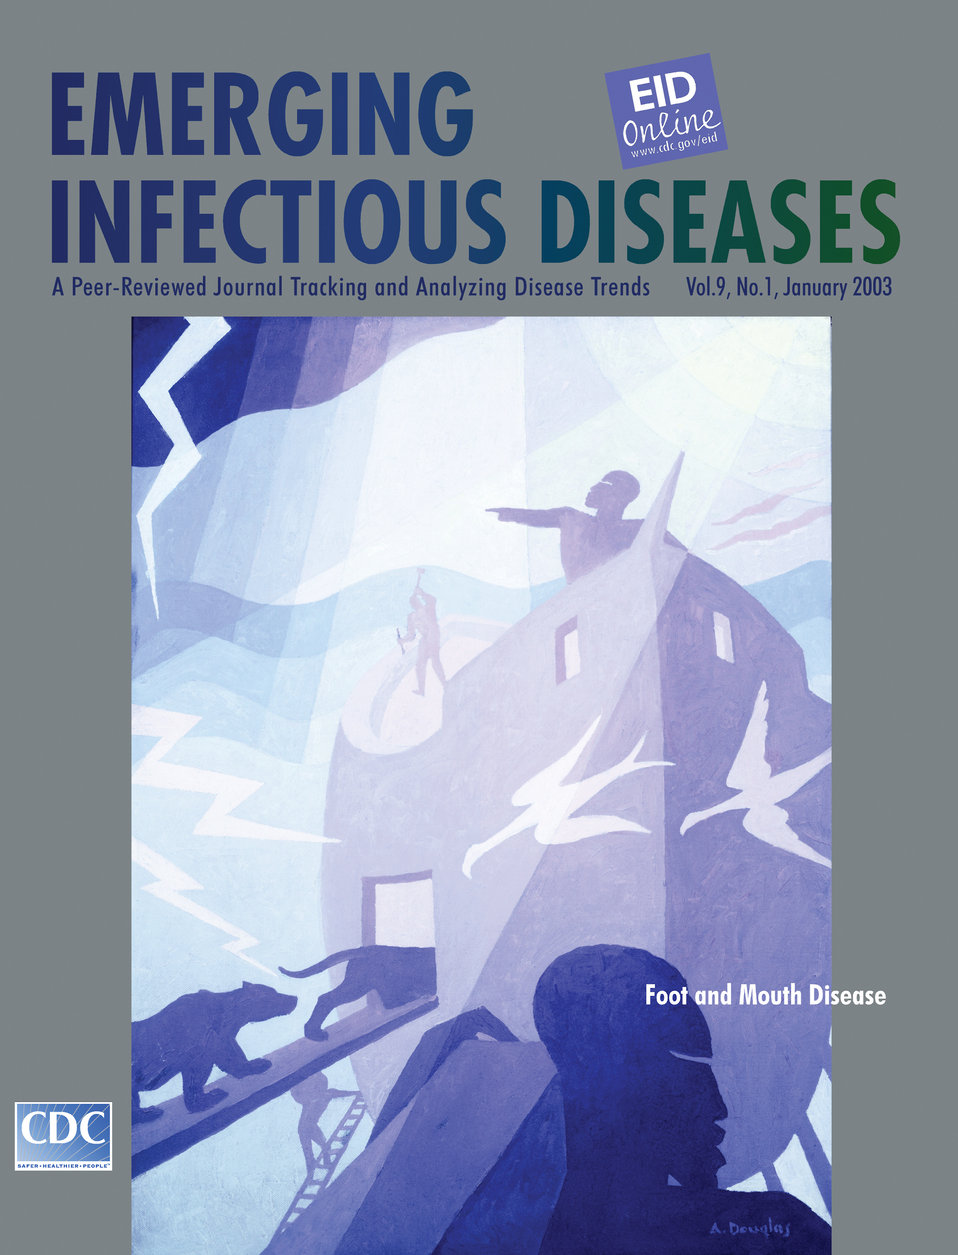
Emerging Infectious Diseases (EID) cover artwork for Volume 9, Number 1, January 2003 issue.